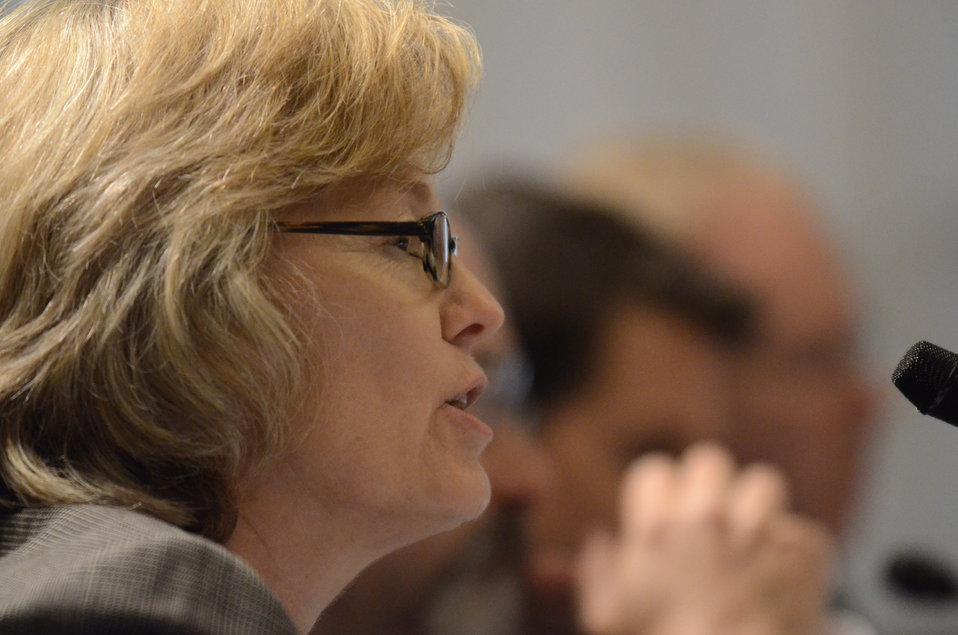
President and Chief Executive Officer, American Forest and Paper Association Donna Harman testifies on Retailers & Entertainers Lacey Implementation & Enforcement Fairness Act & Freedom from Over-Criminalization & Unjust Seizures Act at the Longworth House Office Building in Washington, D.C. on Tuesday, May 8, 2012.